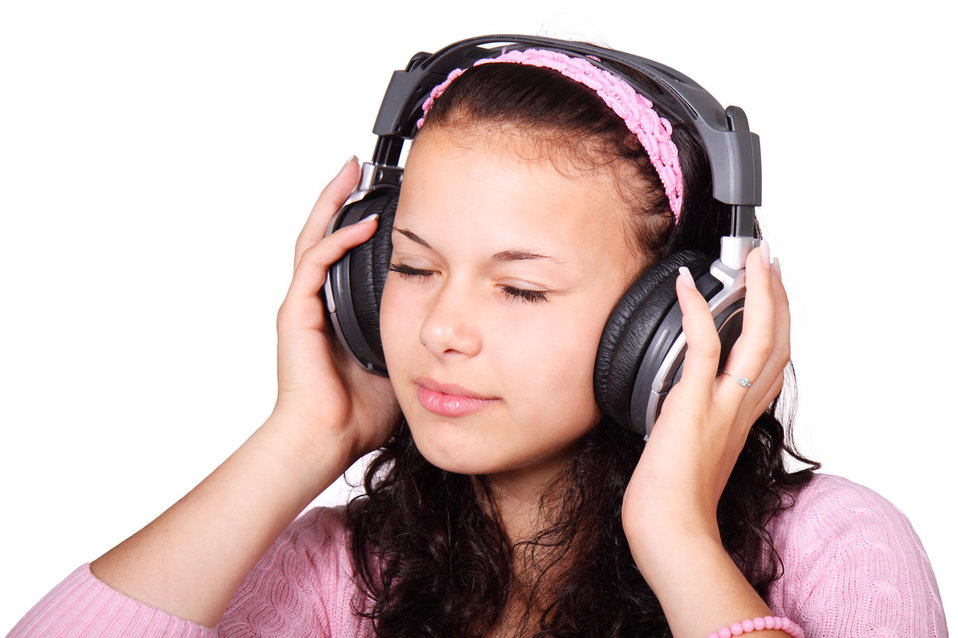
Listening to music

Young woman listening to music with headphones.